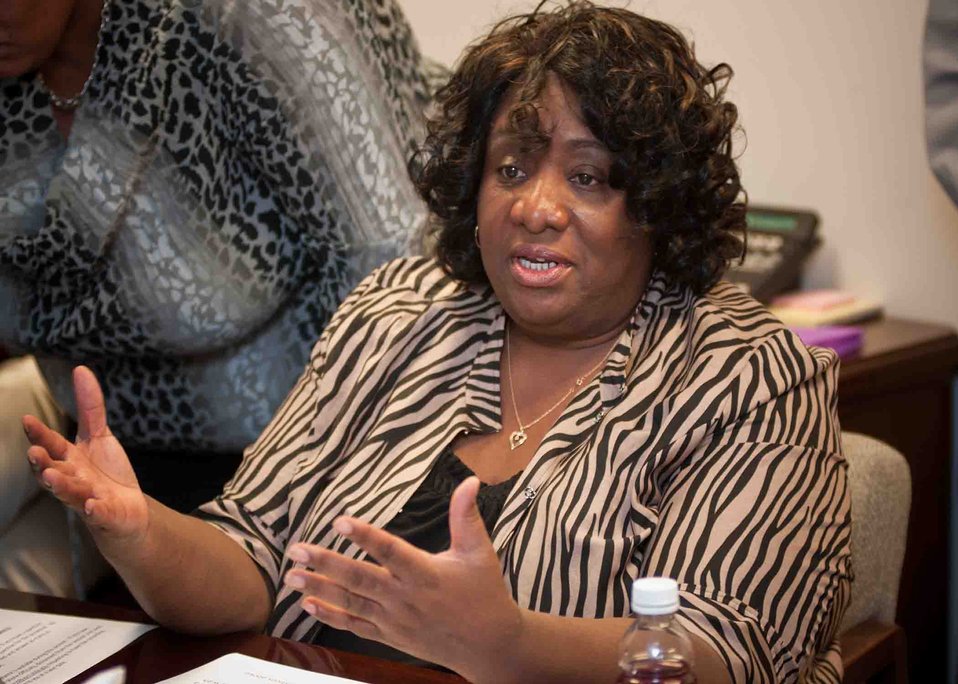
Acting Director, Office of Civil Rights, Early Resolution and Conciliation Division Shelia Wolcott chaired an open house and training workshop for employees and supervisors at the United States Department of Agriculture (USDA) in Washington, DC, Wednesday, Jun. 15, 2011. The primary goal of the workshop was to strengthen the Alternative Dispute Resolution (ADR)community through outreach, training and partnership with agencies in USDA and make employees aware of ADR.